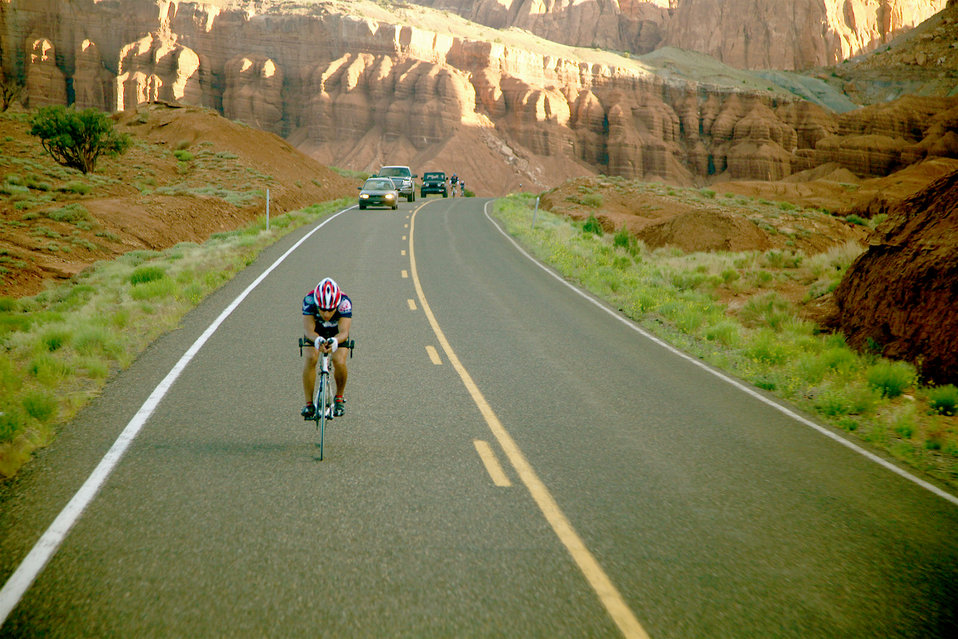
Wounded warrior Sea to Shining Sea

Staff Sgt. Marc Esposito nears the 1,000-mile mark in Utah during Sea to Shining Sea, a 4,000-mile bike ride which started at the Golden Gate Bridge in San Francisco and will end July 24, 2010. in Virginia Beach, Va. The goal of the ride is to honor the courage of our service men and women, recognize the strength of the American spirit and challenge perceptions of how we view athletes from the 21st Special Tactics Squadron, Pope Air Force Base, N.C,.